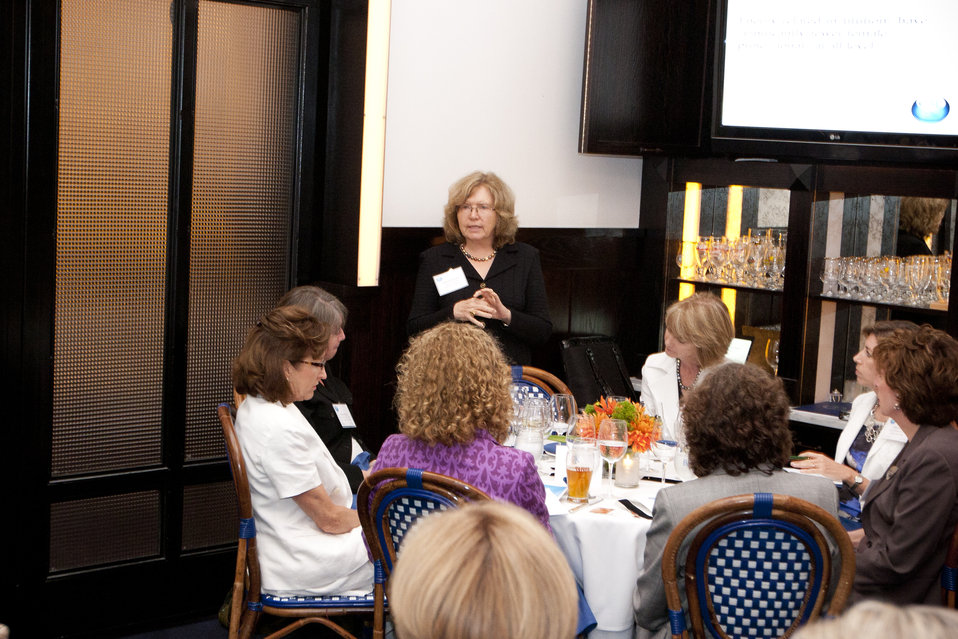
WomenandEnergy 55